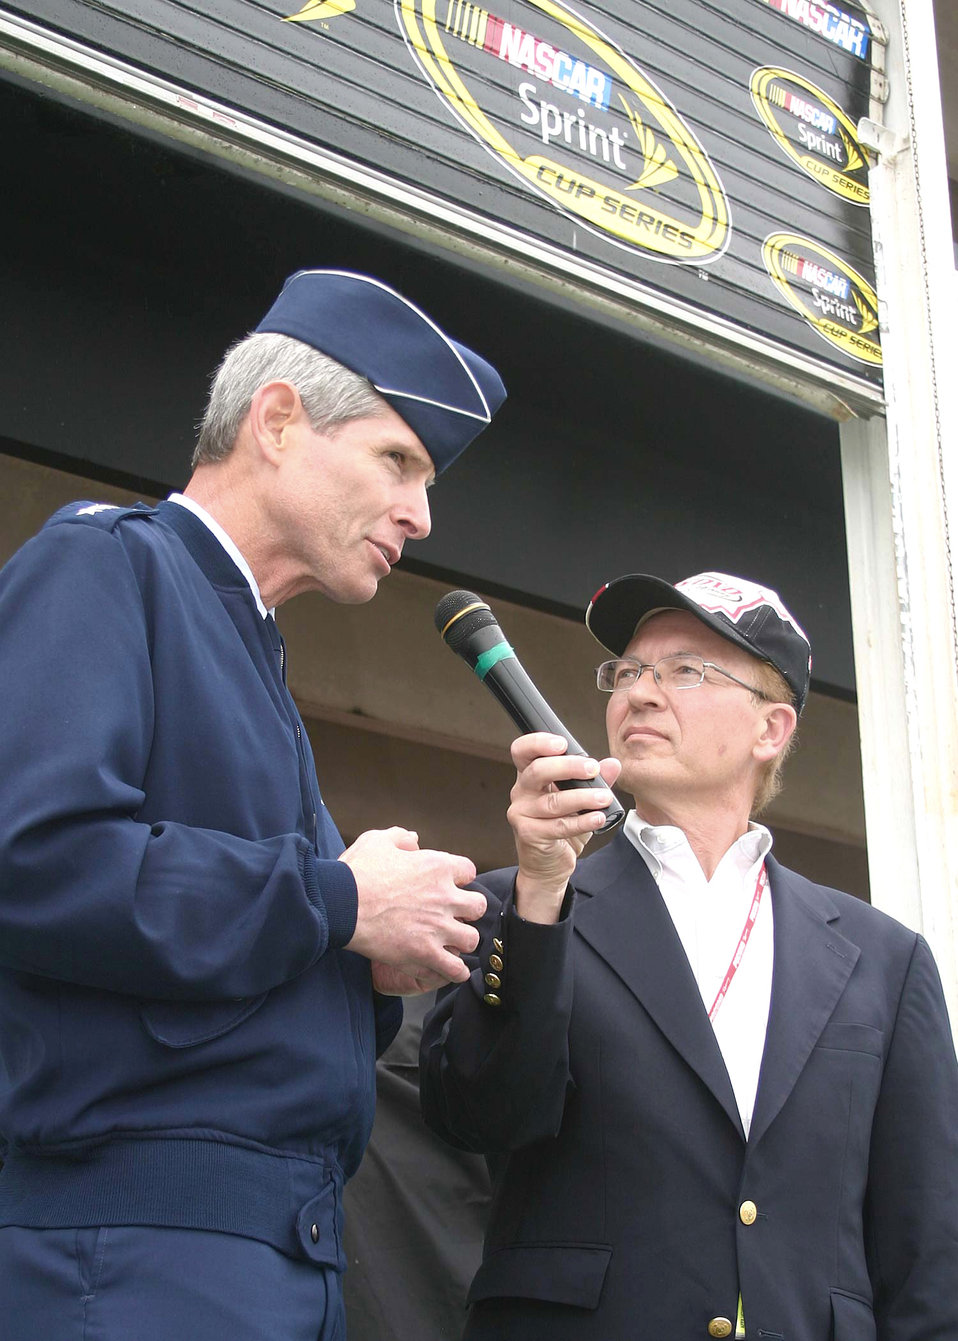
Pennsylvania 500 NASCAR weekend

Earl Krause, Pocono Raceway announcer, introduces Air Force Chief of Staff Gen. Norton Schwartz as the grand marshal for the Pennsylvania 500 NASCAR race Aug. 2. The Pennsylvania 500 was the fifth and final race of the season featuring the Air Force paint scheme.